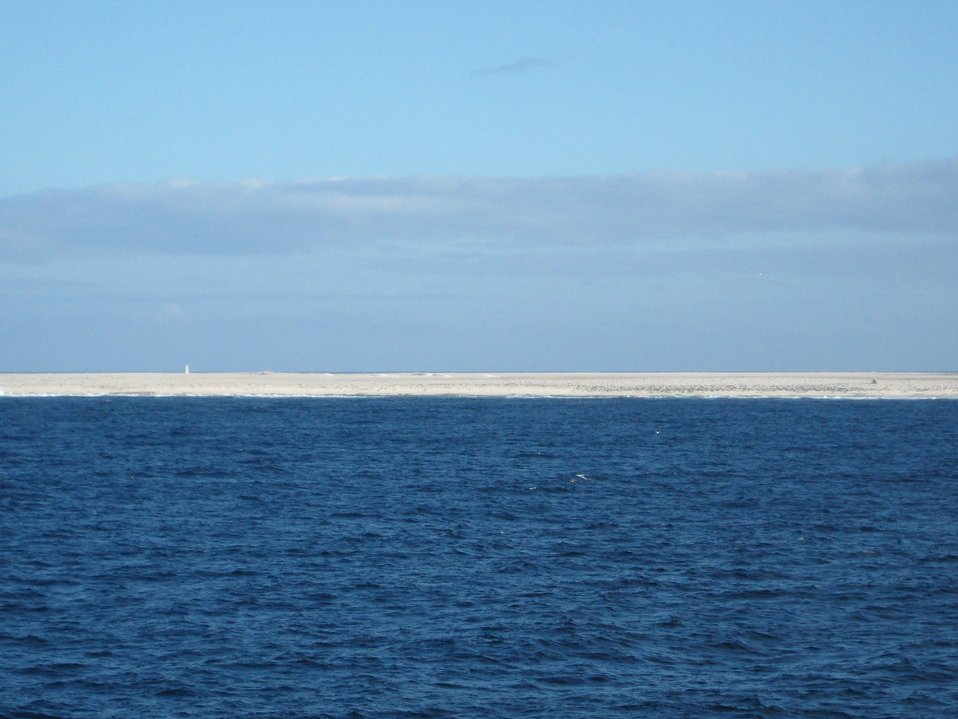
The epitome of a desert island. No vegetation is visible on this white sand island seen from offshore. The structure is the Jarvis Island lighthouse. This island is less than 1/2 degree south of the equator.